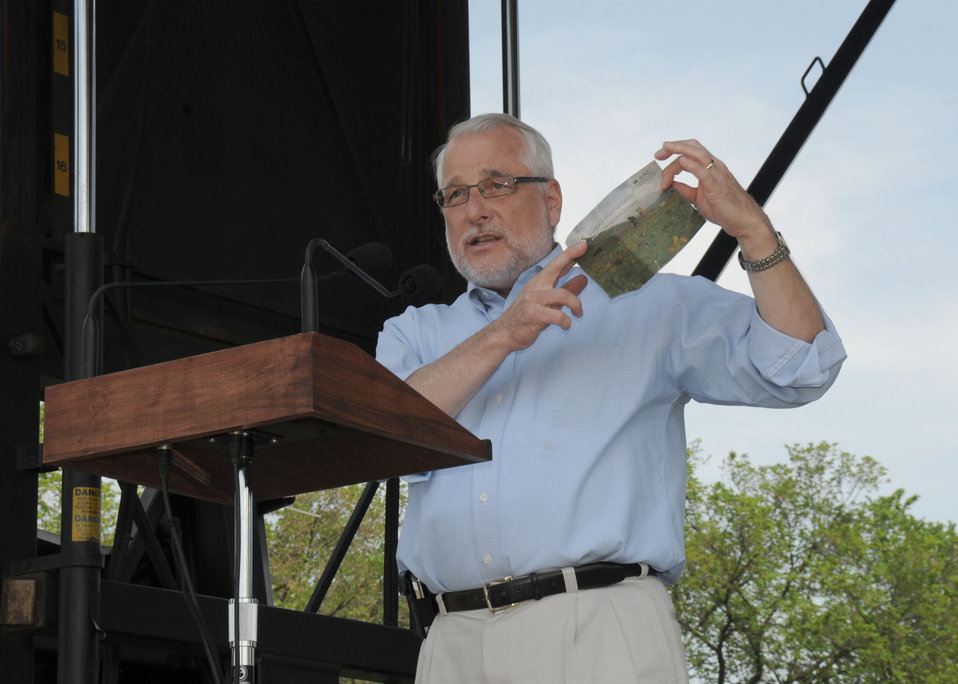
Natural Resources and Conservation Services (NRCS) Chief Dave White speaks at the opening day ceremonies for Earth Day held on the Mall in Washington, D. C., on April 22, 2010. Chief White is explaining about a special “green” postcard that NRCS is handing out at its exhibit. This postcard is made of a biodegradable product with wild flower seeds imbedded in it. “Mail it to a friend and have them plant a garden”, says Chief White. USDA photo 10di1326-85